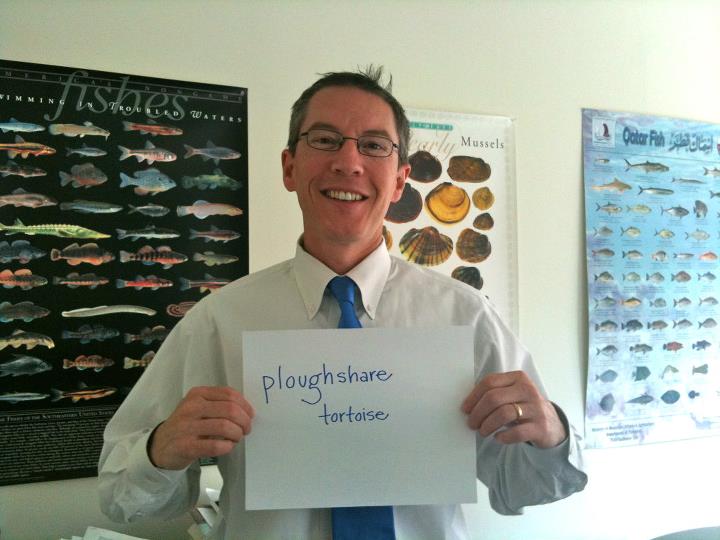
Craig Hoover, 'Ploughshare Tortoise,'

International Affairs participates in FFI's In Our Hands campaign